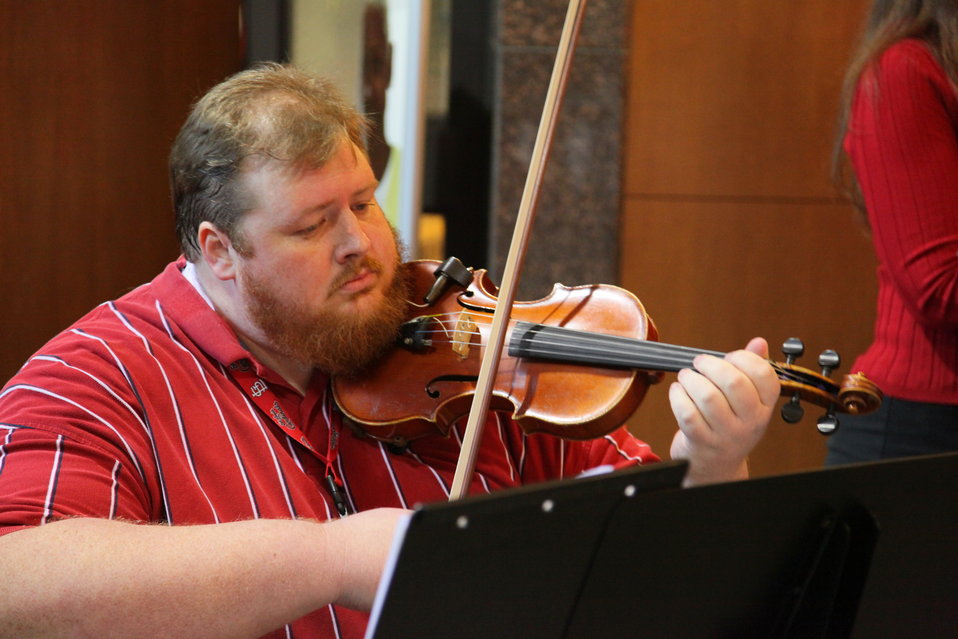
A Sacramento spirited performance by the Corps-Aliers

A violin played by project scheduler St. John Fraser adds a new sound to this year’s Corps-Aliers holiday performance at the U.S. Army Corps of Engineers Sacramento District headquarters building in Sacramento, Calif., Dec. 15, 2011. The all-volunteer group of singers from the district gave a spirited performance earlier this week at the California State Capitol Rotunda. The group is scheduled to perform Dec. 16 at the annual district holiday party.